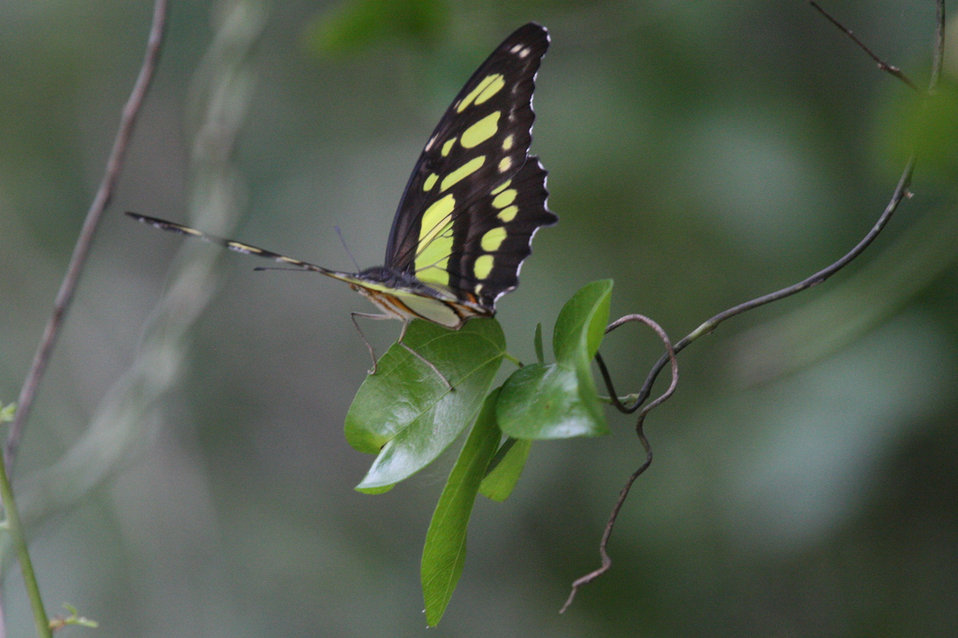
malachite butterfly

Santa Ana National Wildlife Refuge, TX